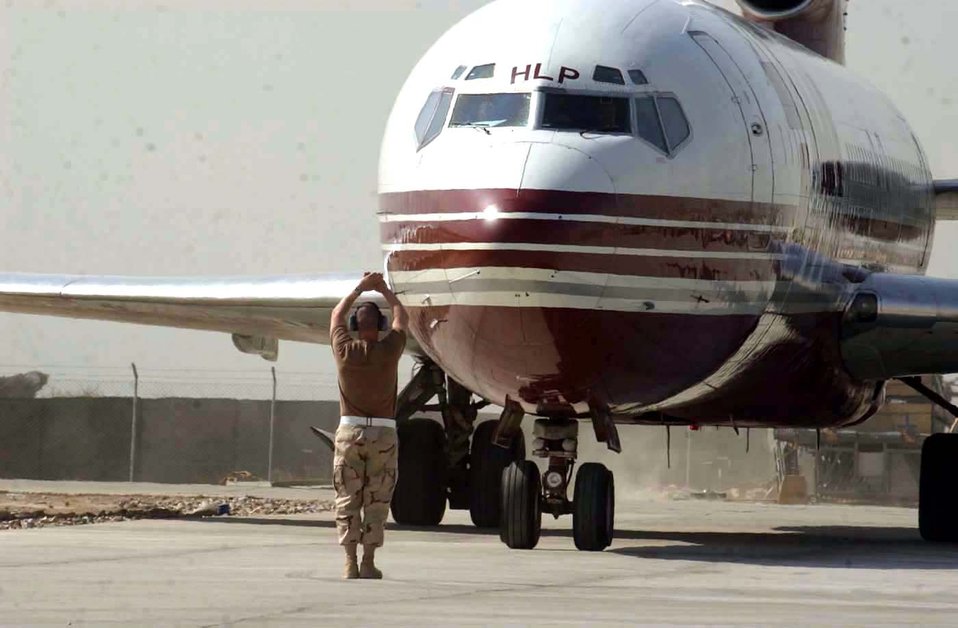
Mail call

BAGRAM AIR BASE, Afghanistan -- Tech. Sgt Chad Nixon marshals a commercial aircraft which is carrying mail for people here. The aircraft and its crew deliver mail and food here six days a week. Sergeant Nixon is a crew chief with the 455th Expeditionary Operations Group's transient alert function, and he is deployed from McChord Air Force Base, Wash.